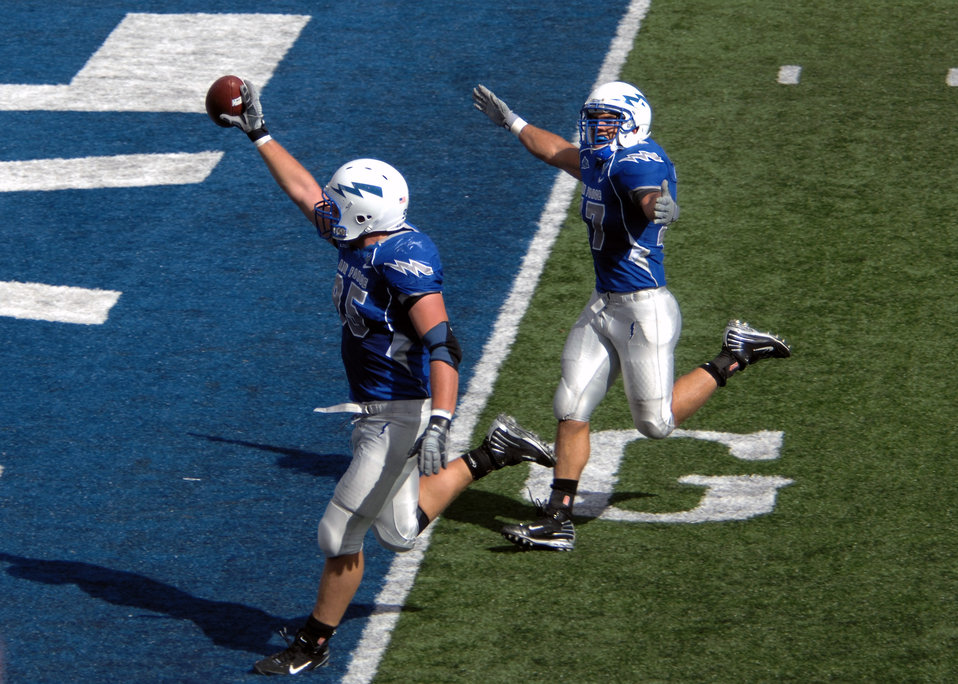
Football: Utah downs Air Force 30-23

U.S. Air Force Academy senior defensive end Jake Paulson crosses the goal line after a fumble recovery, escorted by Falcon linebacker Ken Lamendola Sept. 20 at the Academy in Colorado. Going into the Utah game, Paulson led the nation in sacks with six this season.